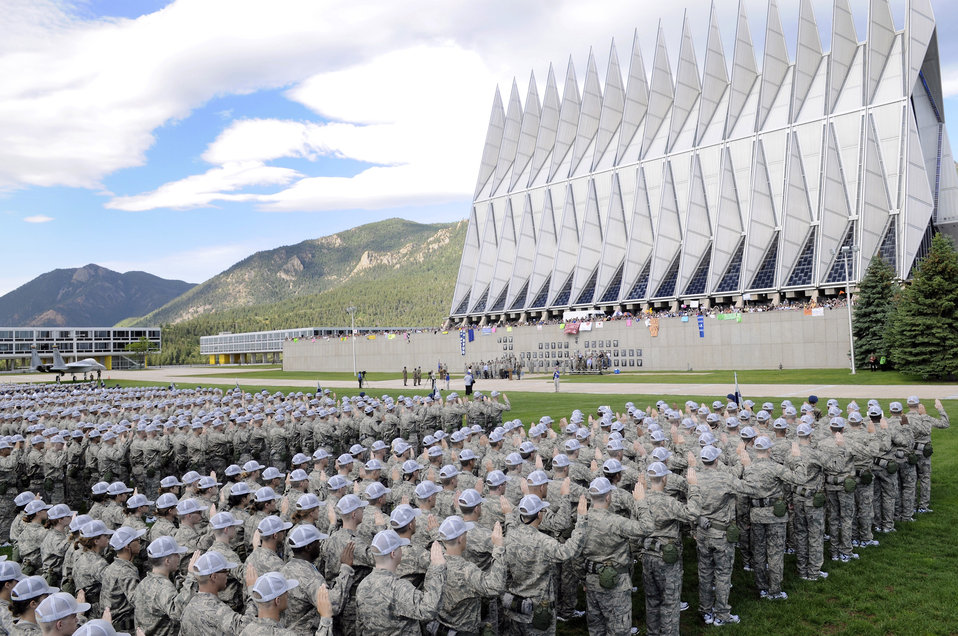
Welcome to the Academy

The 1,376 members of the Class of 2013 recite the Oath of Allegiance in front of the cadet chapel, family and friends during their first formation June 26 at the U.S. Air Force Academy in Colorado Springs, Colo.